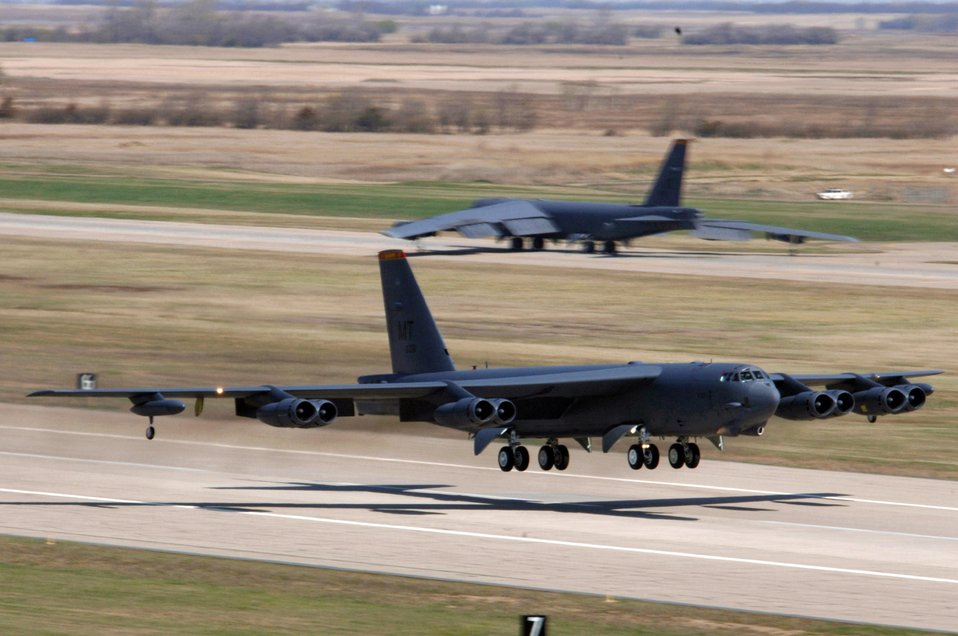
Rapid launch at Minot

A B-52 Stratofortress takes off from Minot Air Force Base, N.D., during a nine-ship rapid-launch generation exercise on Thursday, April 27, 2006. Generation exercises test the base's ability to perform its mission.